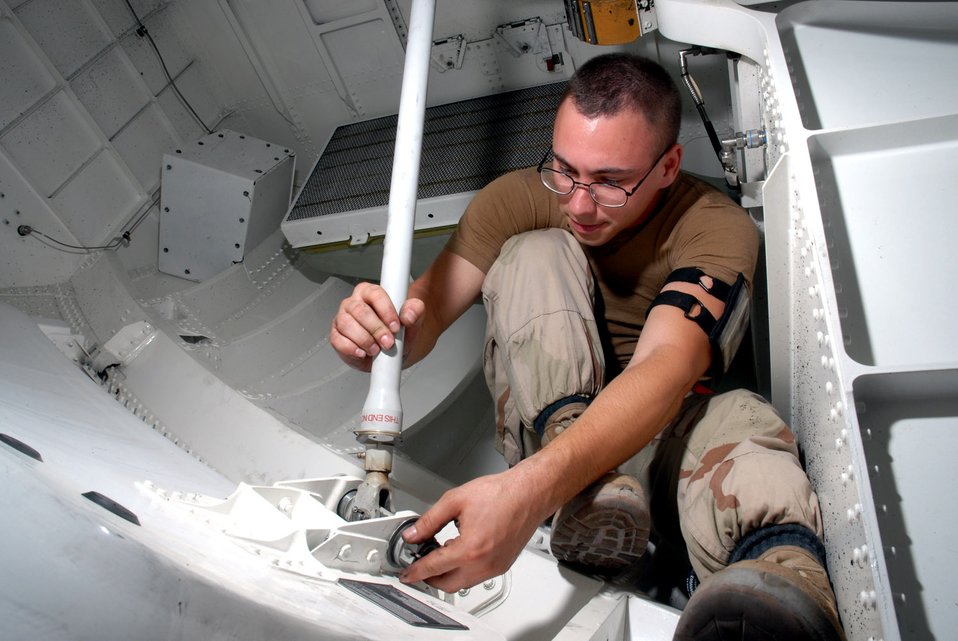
Team effort sets airlift standard

Senior Airman Mark A. Mano, 8th Expeditionary Air Mobility Squadron, inspects the nose gear door pin assembly of a C-17 Globemaster III here Oct. 8. Airman Mano is deployed from Charleston Air Force Base, S.C.